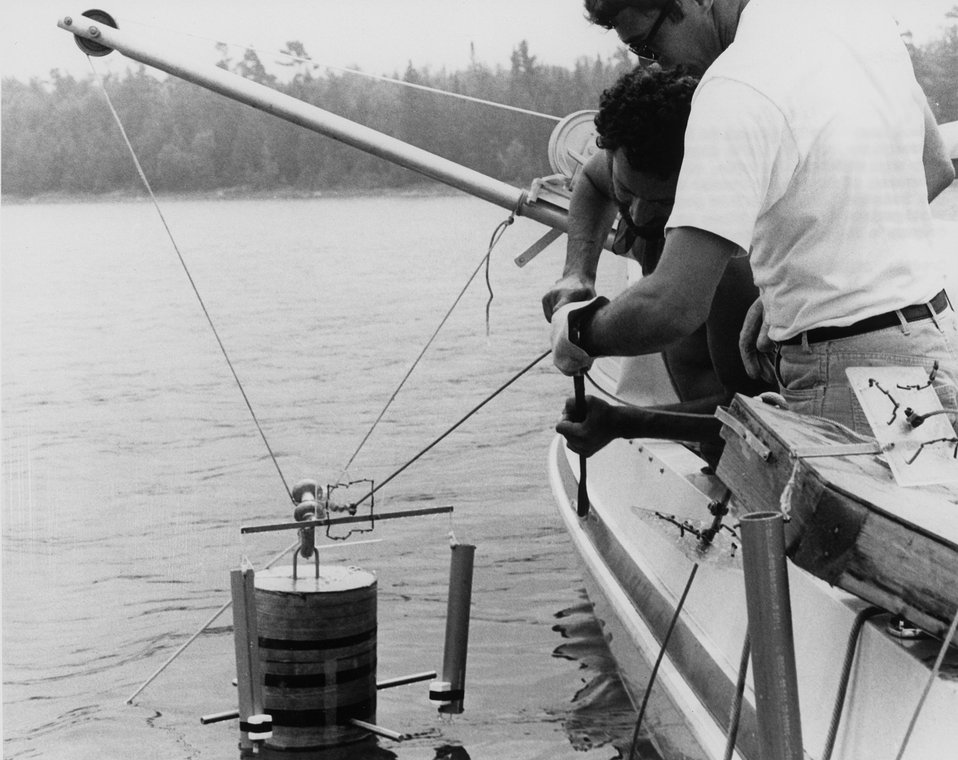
A dosimetry buoy is placed in Lake Michigan by a research team of the AEC's Argonne National Laboratory near Chicago, IL, as part of a study to determine if measurable amounts of radioactivity are put into the lake by nuclear power plants.